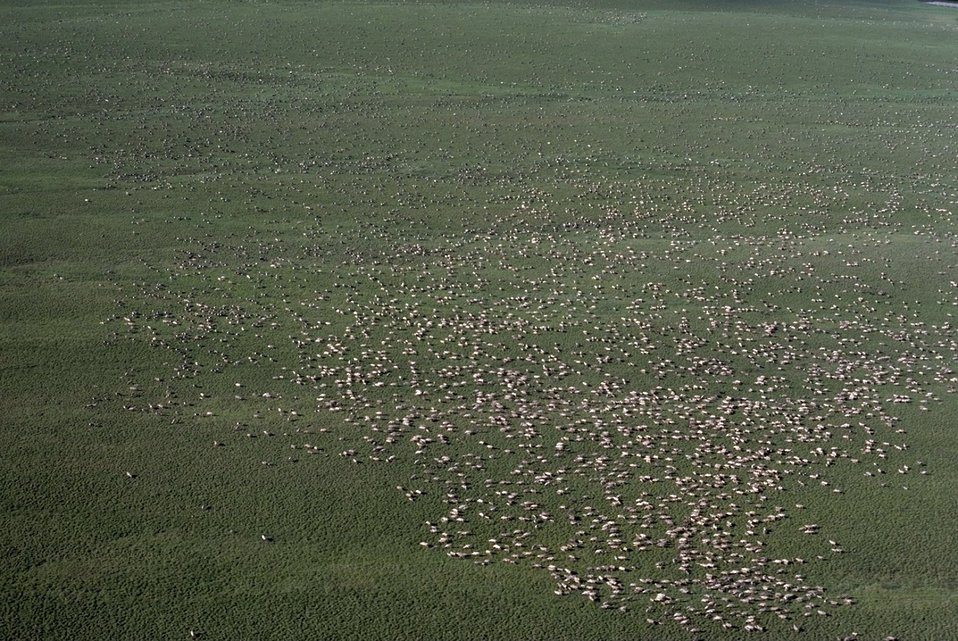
Caribou in a field

Caribou aggregation on the 1002 Area of the Arctic Refuge coastal plain.